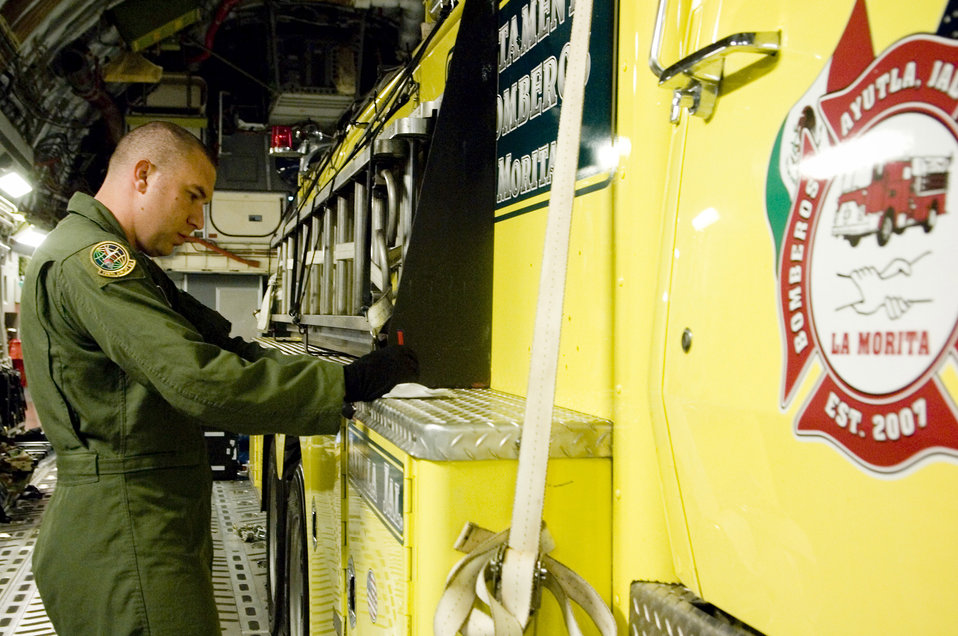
Hola bomberos

Senior Airman Pete Olfuska completes paperwork for his upcoming flight to Mexico Sept. 19 at McChord Air Force Base, Wash. The C-17 Globemaster III humanitarian mission to Mexico is carrying a firetruck and pallets of rescue equipment to Guadalajara, Mexico. Through the Denton Amendment, three local Washington nonprofit agencies worked with the 446th Airlift Wing for more than a year in order to transport the firetruck and cargo to Mexico. Airman Olfuska is a loadmaster with the 728th Airlift Squadron.